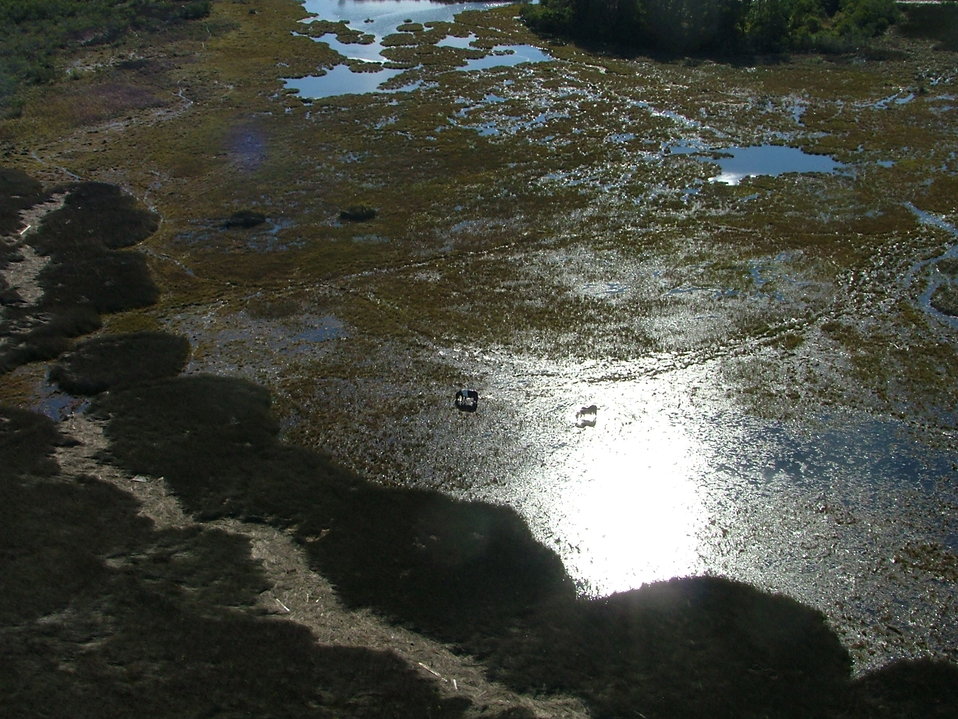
Ponies Graze at Chincoteague National Wildlife Refuge (VA)

The Chincoteague ponies were released from their corrals before Hurricane Sandy so they could find high ground and weather the storm. These ponies were seen grazing during a helicopter flight over the refuge surveying for damages after the storm.